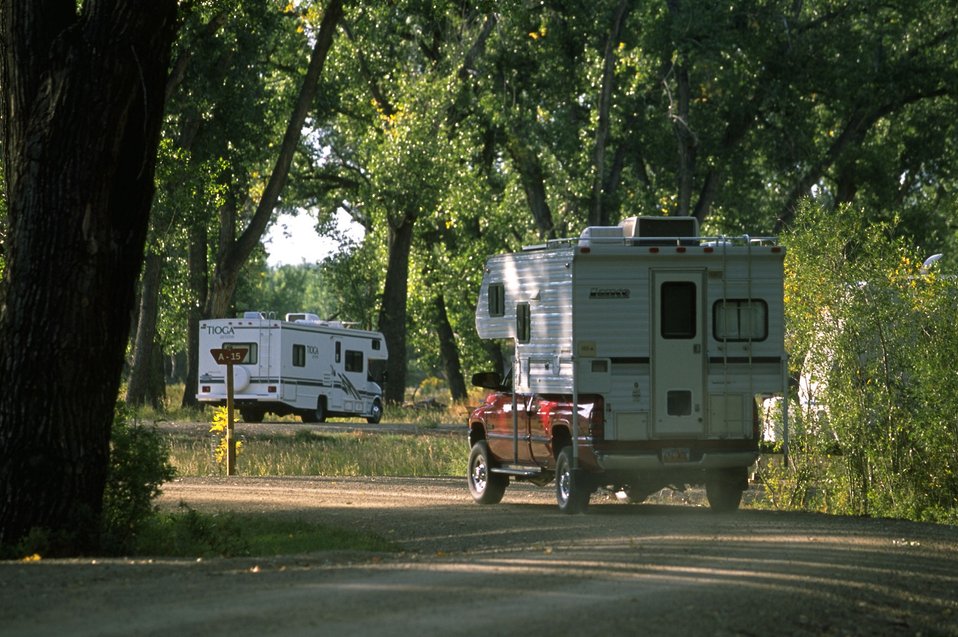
Kipp recreation area with pickup camper